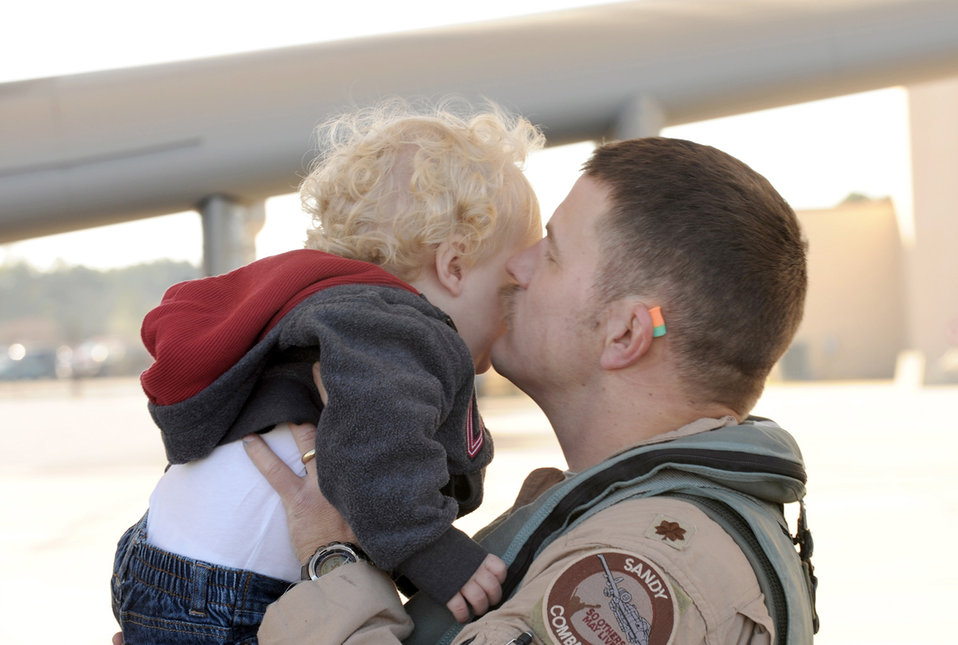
Air Force Week in Photos for Dec. 17, 2010, feature Airmen around the world. In this photo by Airman 1st Class Douglas Ellis, Maj. Dennis Ott kisses his son, Vaughn, after returning to Moody Air Force Base, Ga., Dec. 9, 2010, from his deployment to Afghanistan. Major Ott is a pilot assigned to the 75th Fighter Squadron.